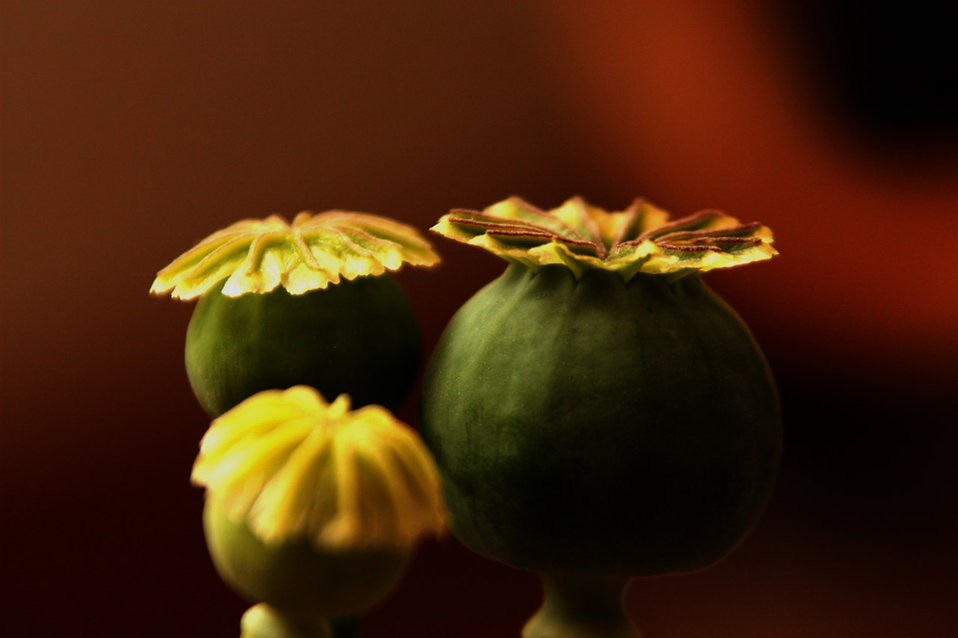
Poppies

Spring poppies.